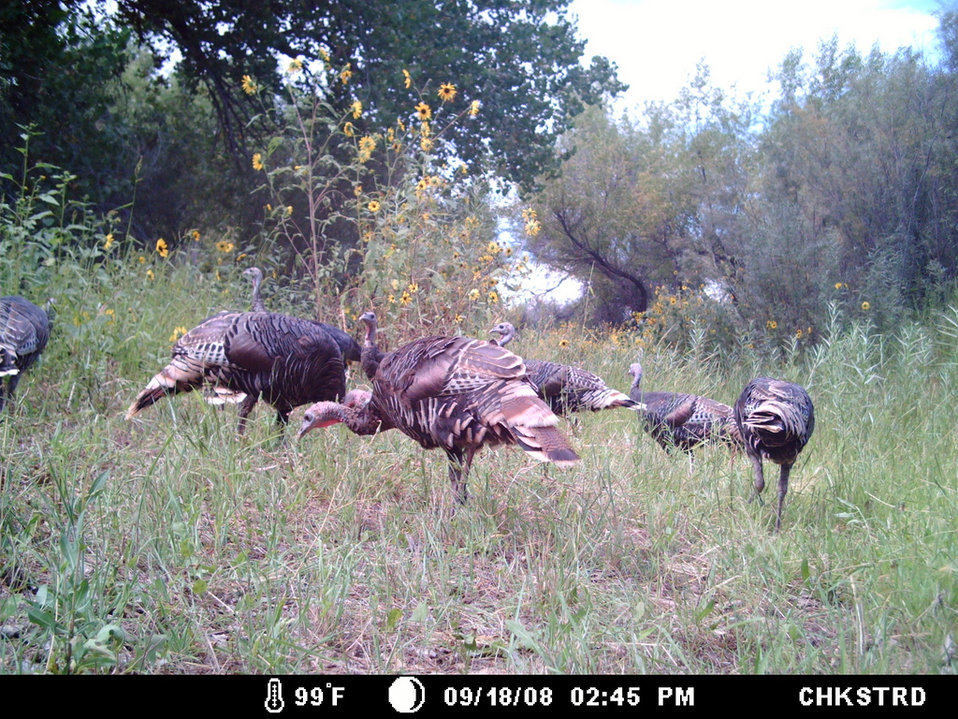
wild turkeys

Bosque del Apache National Wildlife Refuge, NM
Camera trap project by Matt Farley, Jennifer Miyashiro, and J.N. Stuart.